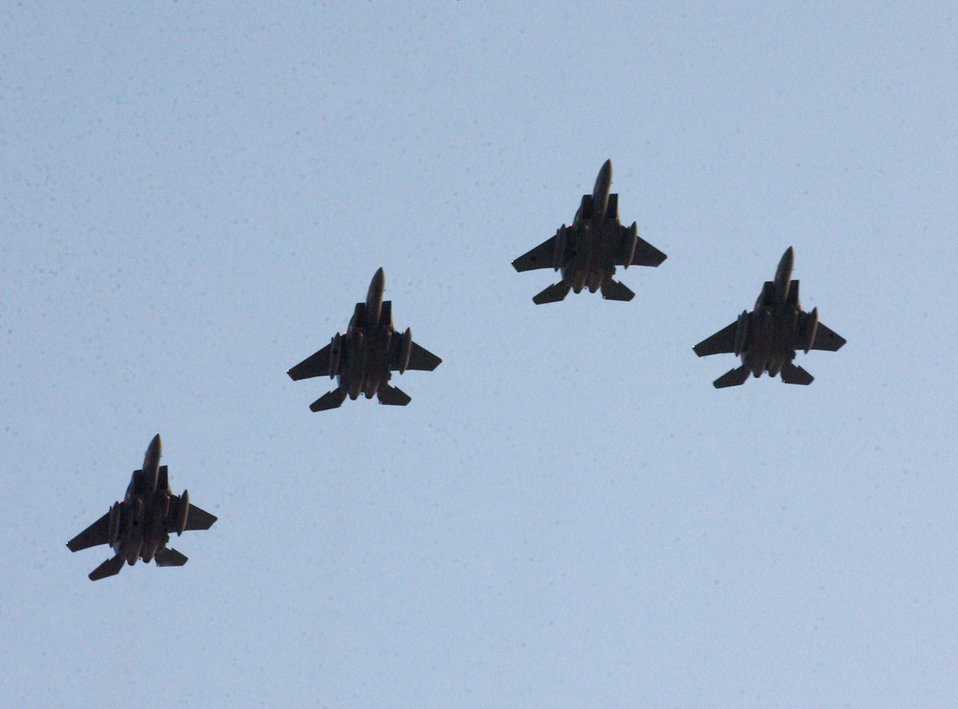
A tribute to President Reagan

OVER WASHINGTON (AFPN) -- A flight of F-15E Strike Eagles from the 4th Fighter Wing at Seymour Johnson Air Force Base, N.C., fly over former President Ronald Reagan's funeral procession down Constitution Avenue here June 9. President Reagan served as the military's commander-in-chief from 1981 to 1989. The pilots performed a 21-ship flyover and a missing-man formation tribute for the ceremony.